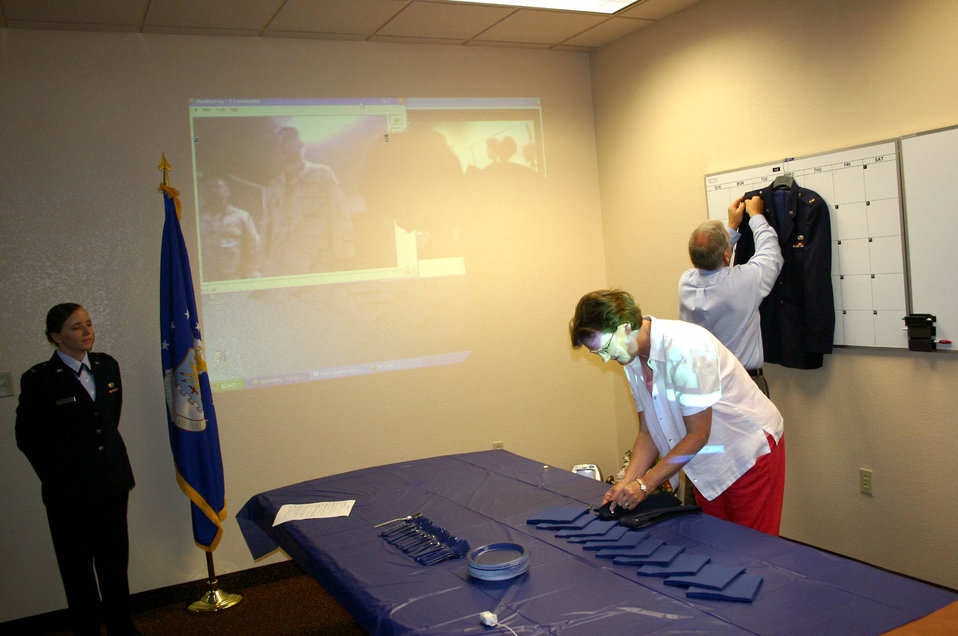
Promotion takes to airwaves

LAUGHLIN AIR FORCE BASE, Texas -- Glenn Johnston pins new rank on his son's service dress coat during a video conference promotion ceremony, as his wife pins the hat. Their son, 1st Lt. Eric Johnston, is deployed to Balad Air Base, Iraq. The lieutenant's wife, 1st Lt. Sheila Johnson, (far left) also was promoted during the ceremony. She is assigned to the 47th Flying Training Wing's public affairs office here.